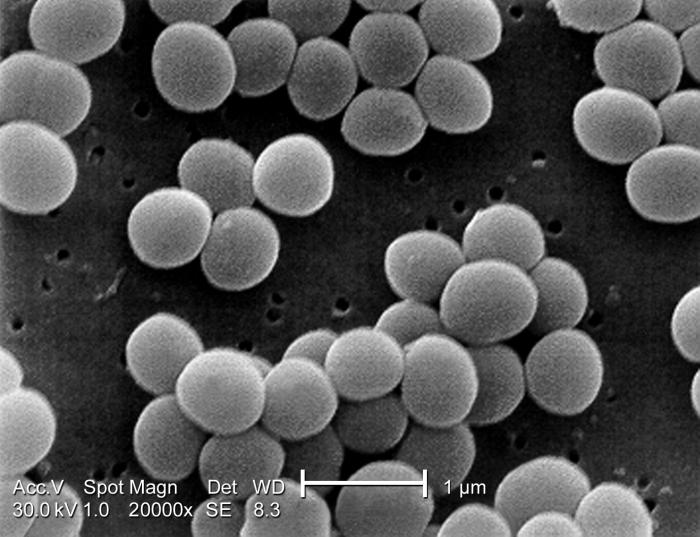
Under a very high magnification of 20,000x, this scanning electron micrograph (SEM) shows a strain of Staphylococcus aureus bacteria taken from a vancomycin intermediate resistant culture (VISA).